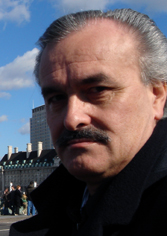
Alfonso Gumucio in London, 2003